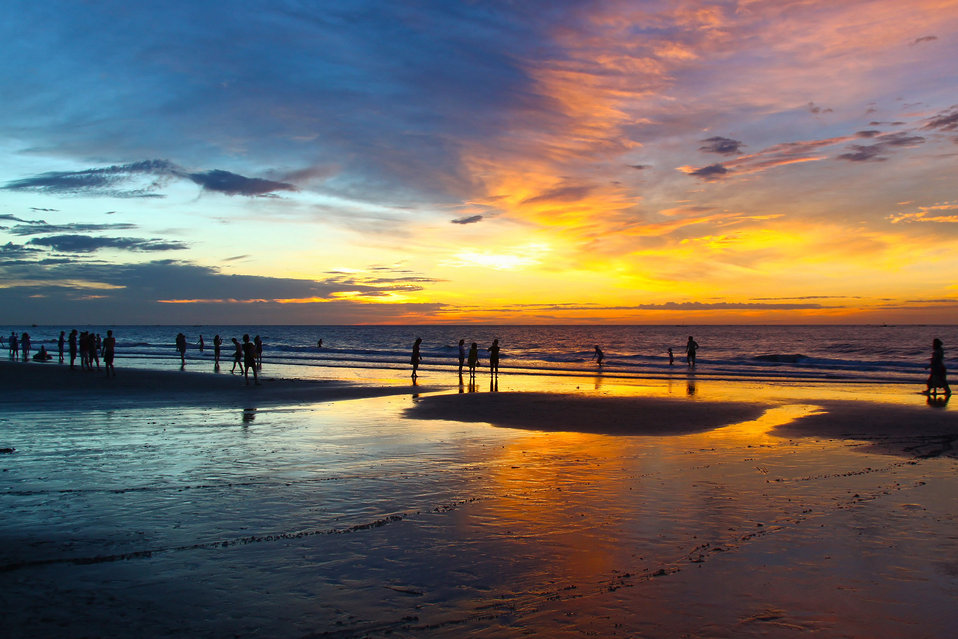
Sunrise #5

Sunrise in sam son beach, việt nam.